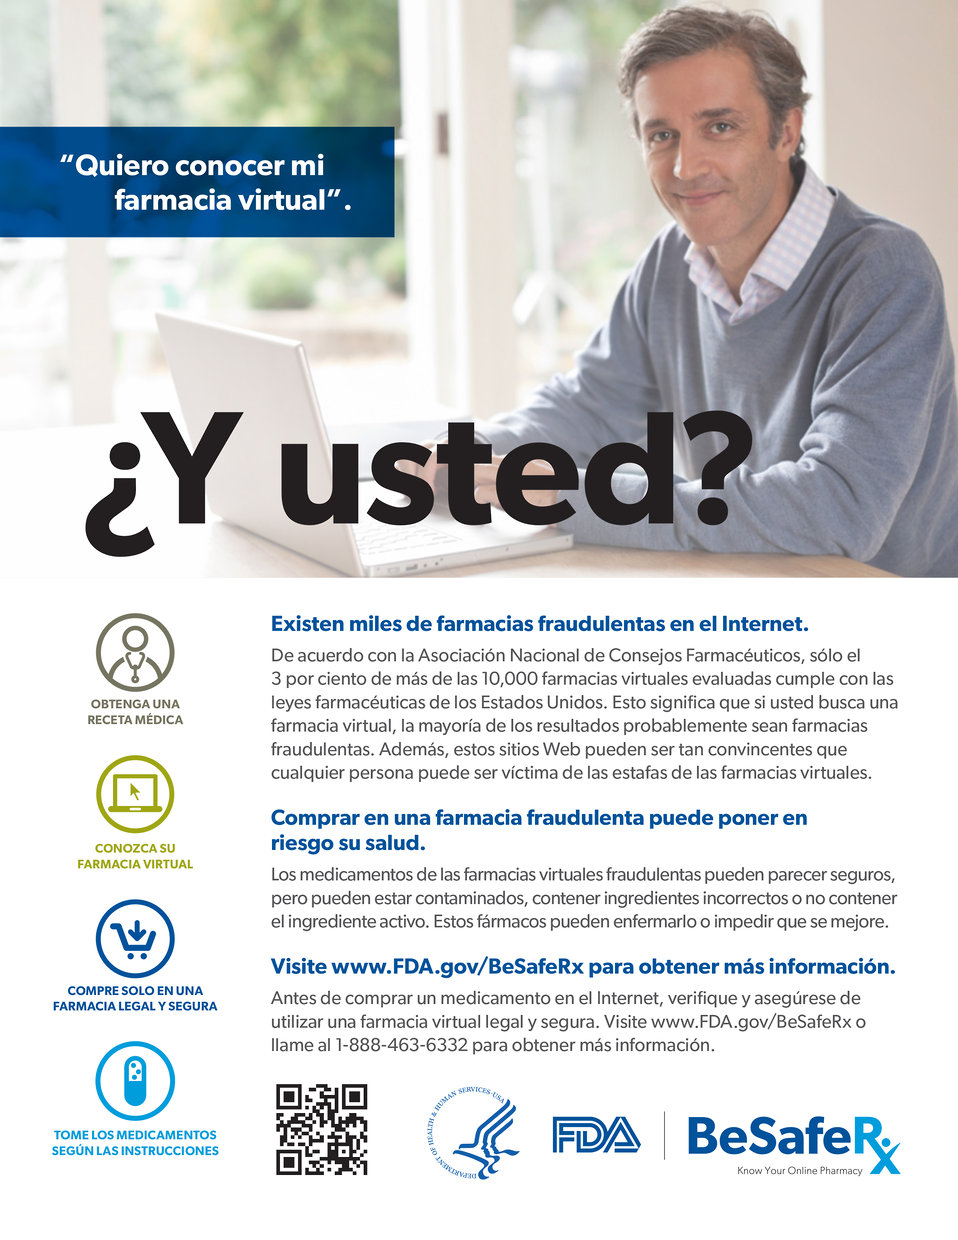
BeSafeRx Consumer Fact Sheet (Spanish)

A high quality PDF of this public service announcement is available at: BeSafeRx Campaign Materials

This is your one-stop resource for all materials associated with the FDA BeSafeRx campaign. FDA developed these materials to educate consumers about the risks associated with fake online pharmacies and how to safely purchase prescription medicine online. Put them to work for you!